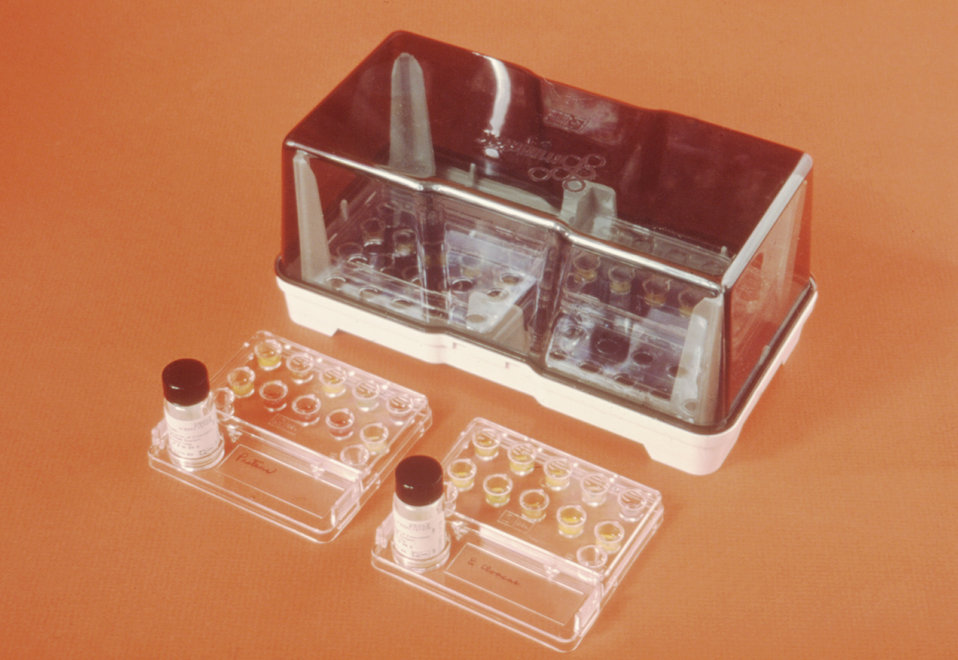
The Minitek� System consists of disposable well plates that are used to hold disks impregnated with biochemical substrates.